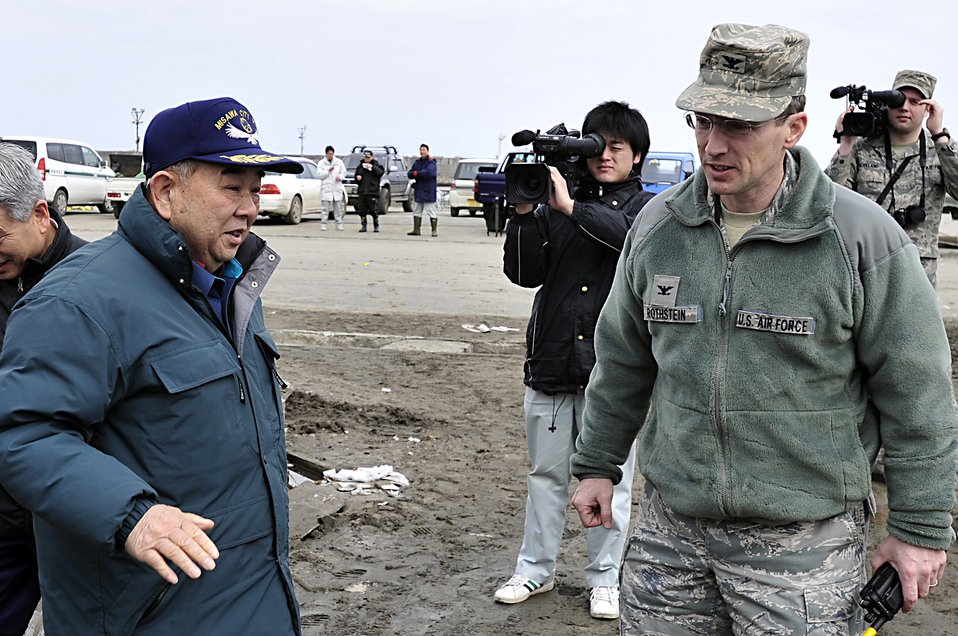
Misawa Air Base lends a helping hand

MISAWA AIR BASE, Japan -- Col. Michael Rothstein, 35th Fighter Wing commander, talks with Mr. Taneichi Kazumasa, Misawa City mayor, at the Misawa City Port Mar. 15. Colonel Rothstein responded to the city?s call of support to clean and restore the port and beach areas.